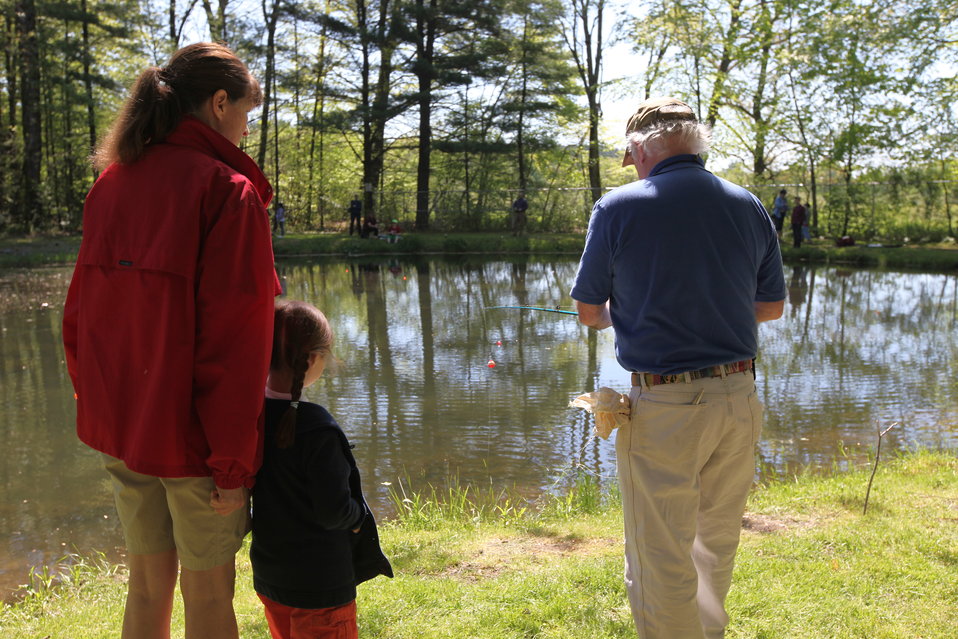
Youth Fishing Derby 2012

Megan Nagel/USFWS